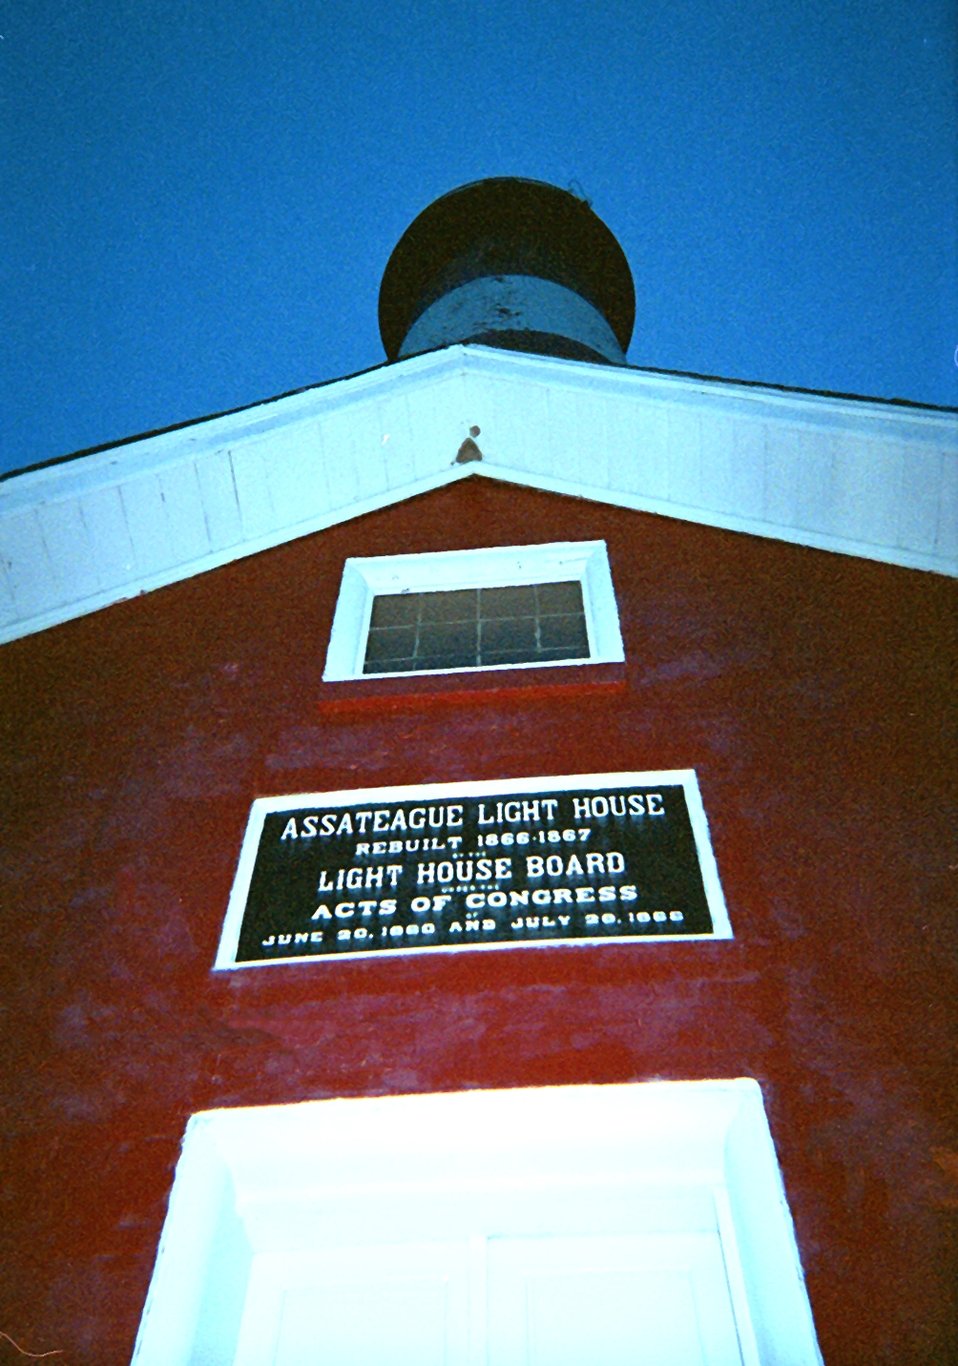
The entrance to Assateague Light House.